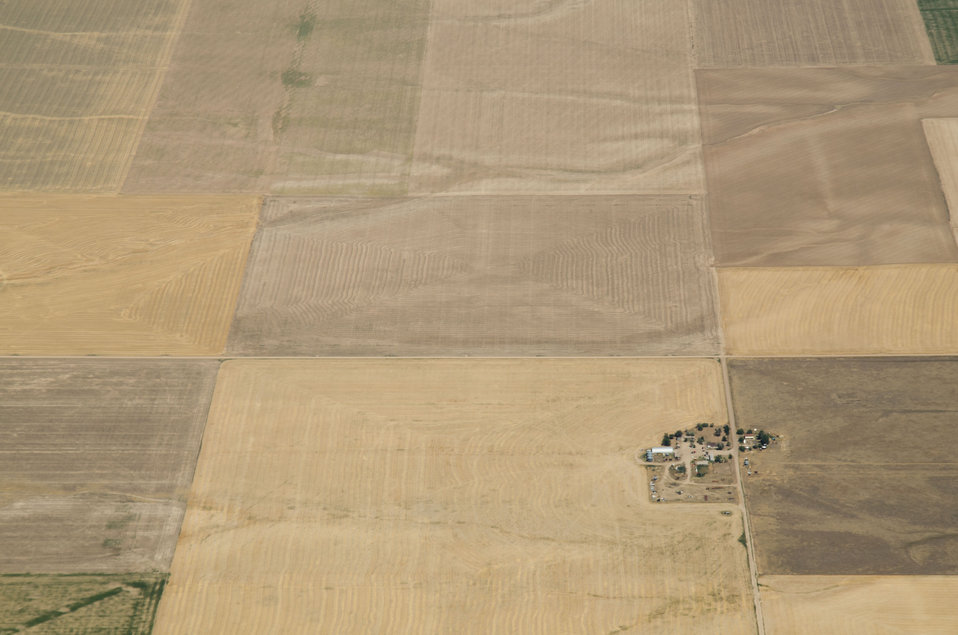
Aerial views of drought affected Colorado farm lands near Strasburg, Colorado, on Saturday, July 21, 2012.